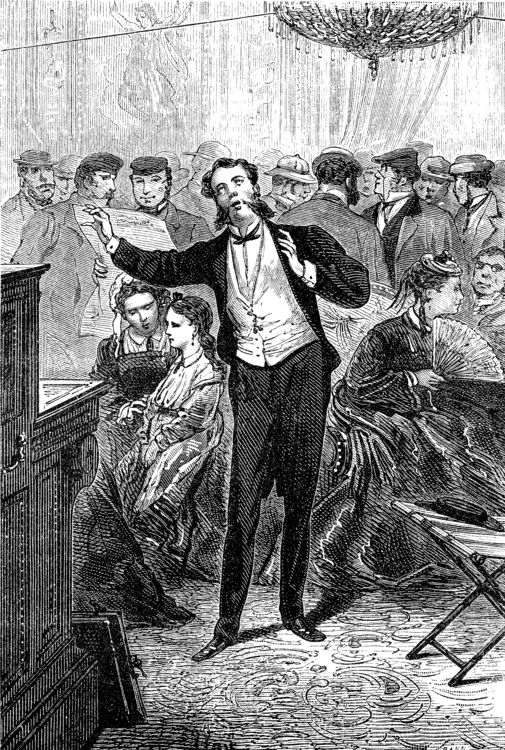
An illustration from Jules Verne's novel 'A Floating City' (1869) drawn by Jules Férat. Polski: Ilustracja powieści Juliusza Verne'a 'Pływające miasto' (1869) autorstwa Julesa Férata. Français : Jules Verne: 'Une Ville flottante' (1869), dessins par Jules Férat. Orginal text: Français : Un ténor fort joli garçon.